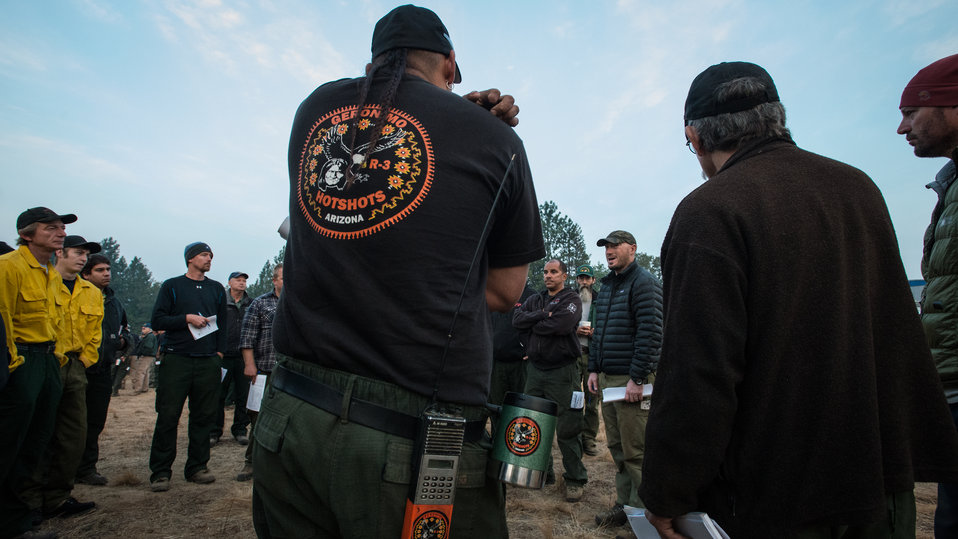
Following morning Briefing crews such as the Geronimo Hotshots (foreground) gather around Division Task Force leaders for assignments at the Big Windy Complex Wildlands Fire, Incident Command Post (ICP) in Merlin, OR on Friday, Aug 9, 2013. The fire center is approximately 15 miles west of Interstate-5 and East Northeast of Galice, Oregon.